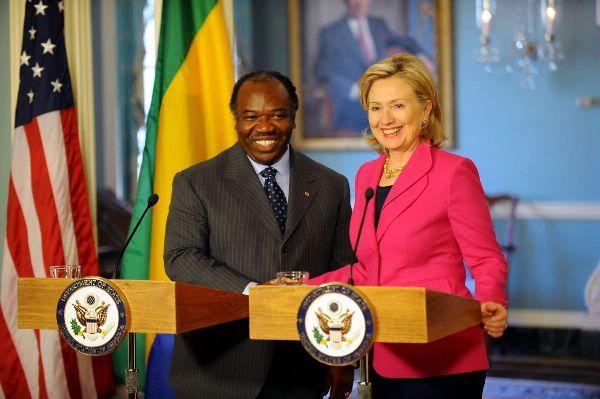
Secretary Clinton With President Bongo of Gabon

U.S. Secretary of State Hillary Rodham Clinton with President Bongo of Gabon at the U.S. Department of State in Washington, DC, March 8, 2010.